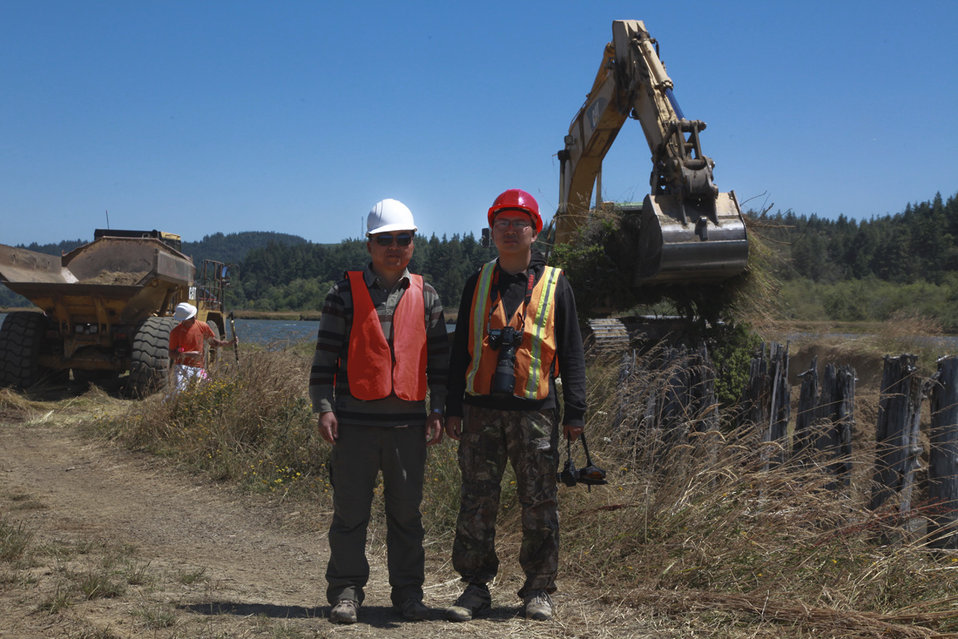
First Dike Removal